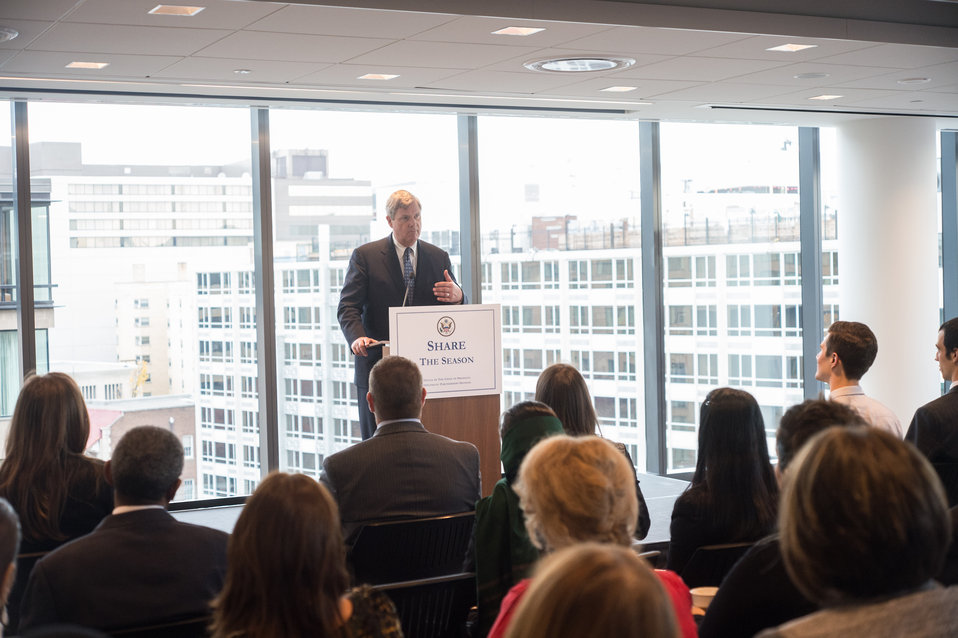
Agriculture Secretary Tom Vilsack speaks to embassy representatives at a Share the Season event organized by the U.S. Department of State Office of the Chief of Protocol Diplomatic Partnership Division at the Business Roundtable (BRT) in Washington, D.C. on Thursday, Nov. 21, 2013. BRT is a non-profit association of chief executive officers of leading U.S. companies that encourages embassies and diplomats to be active in local community service projects.